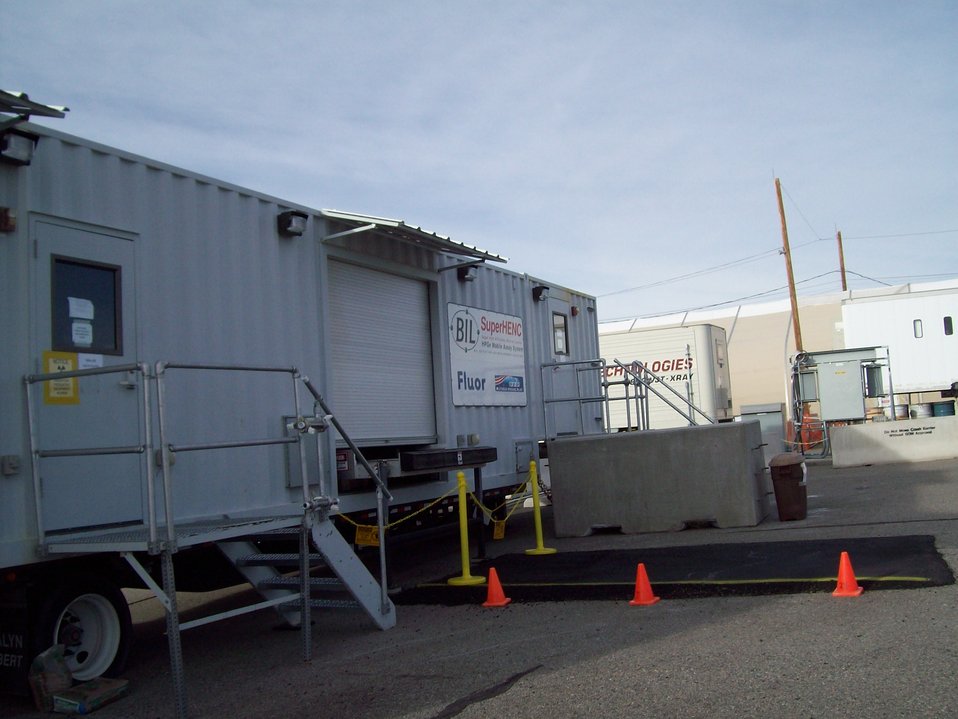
New equipment at LANL

On October 28, 2011, the Environmental Protection Agency approved the Department of Energy’s request to use new equipment at the Los Alamos National Laboratory (LANL) in Los Alamos, N.M. for examining transuranic (TRU) waste to ensure prohibited items such as aerosol containers are not in waste shipped to WIPP.

The new equipment is called a super high efficiency neutron counter (SuperHENC) and has higher fidelity to “x-ray” contact-handled TRU (CH-TRU) waste boxes. Like the Transportation Safety Administration screening for prohibited items on planes, EM screens for items that are not allowed in waste going to WIPP due to the potential hazards (physical, chemical, and nuclear characteristics) primarily associated with transporting the wastes to WIPP.

Prior to having the SuperHENC, waste packages were opened and sorted by hand to ensure no prohibited items were in the waste or waste containers. Now with SuperHENC fewer waste containers will need to be opened and sorted by hand, thereby reducing potential worker exposure and increasing the efficiency of the sorting processes.